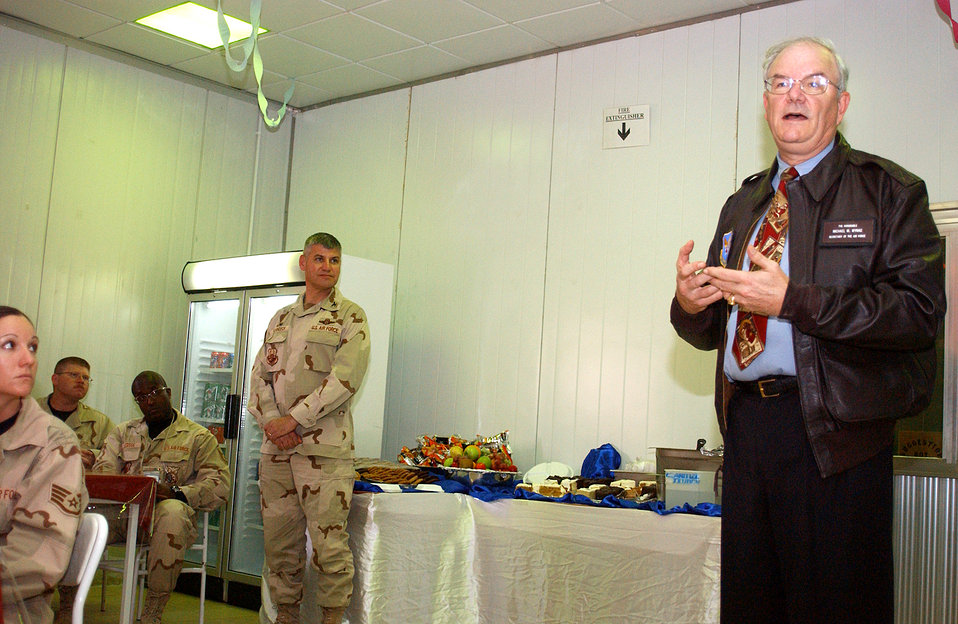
SECAF visits deployed Airmen, shares insight

ALI BASE, Iraq -- Secretary of the Air Force Michael W. Wynne passed along holiday greetings and answered several questions from Airmen during a luncheon here Dec. 19.